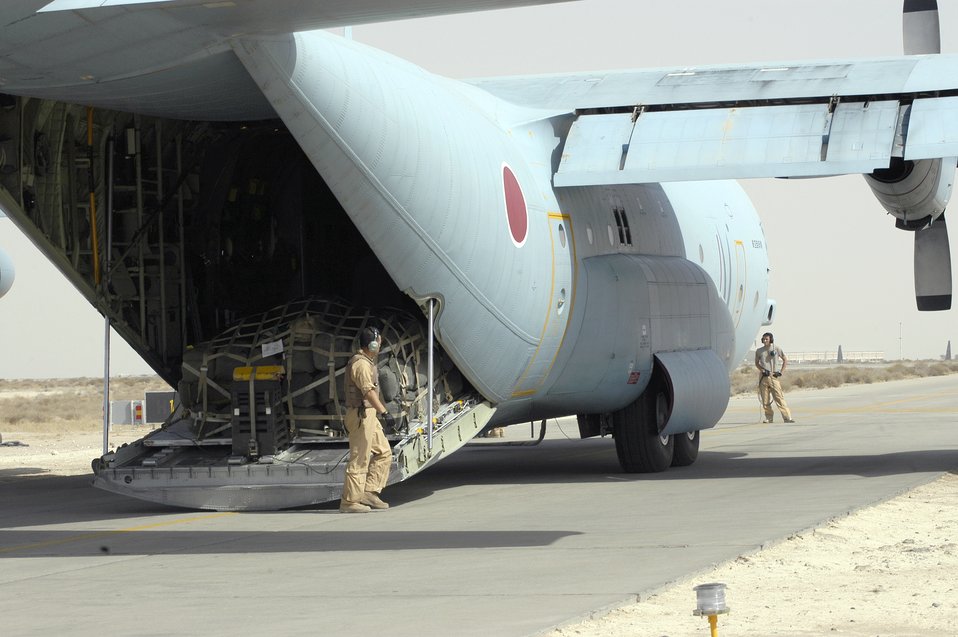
Japanese military key member of coalition

Aircrew from the Japan Air Self-Defense Force load and pre-flight one of their C-130s before a mission in Southwest Asia.